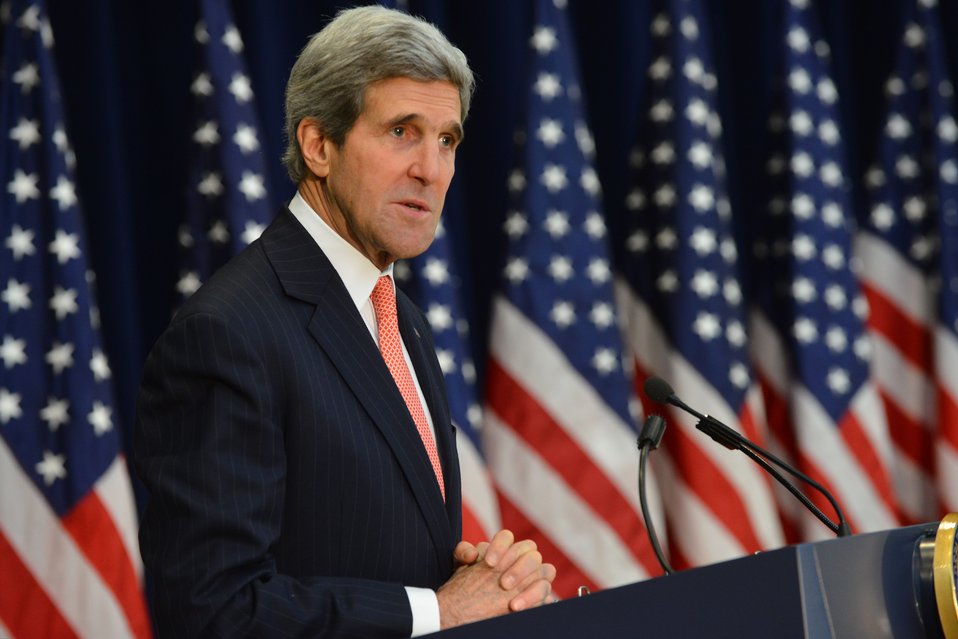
Secretary Kerry Delivers Remarks at the Annual Department of State Retirement Ceremony

U.S. Secretary of State John Kerry delivers remarks at the annual Department of State Retirement Ceremony at the U.S. Department of State in Washington, D.C., on January 28, 2014.